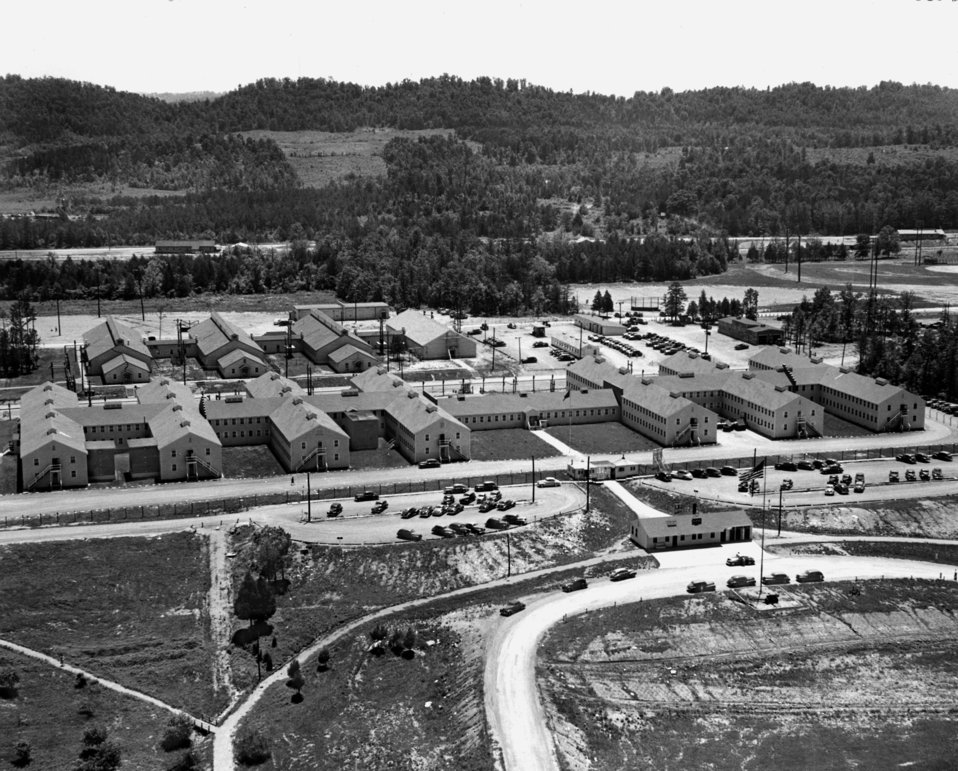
Adminstration Bldg. Oak Ridge

3482 DOE photo by Ed Westcott 5/21/1947 Oak Ridge Tennessee